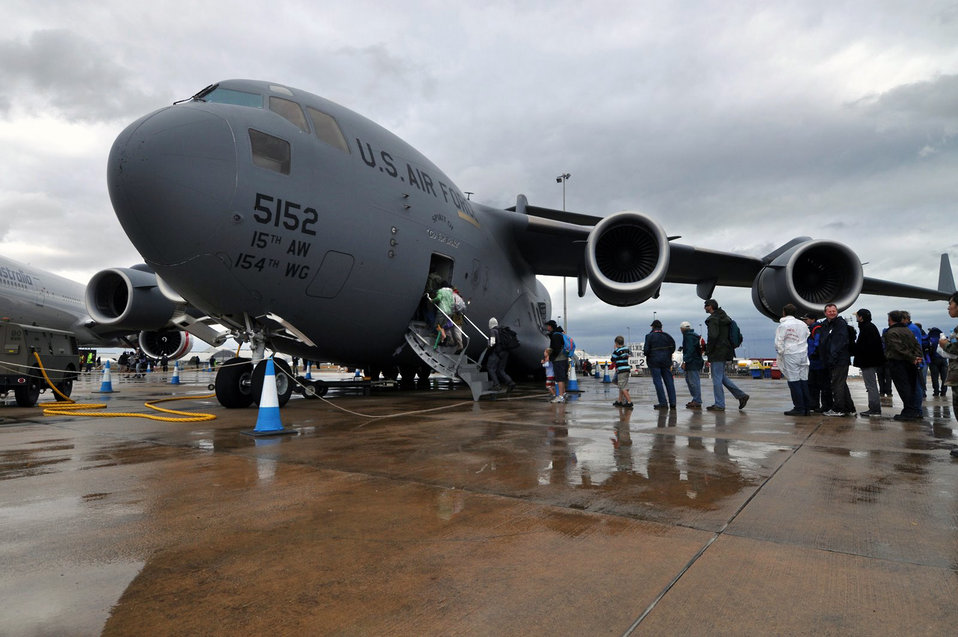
Airmen represent U.S. military at airshow 'down under'

Airshow crowds take a firsthand look at a C-17 Globemaster III at the 2009 Australian International Airshow March 15 at Avalon Airport, Australia. The C-17, from the 535th Airlift Squadron from Hickam Air Force Base, Hawaii, was one of 11 U.S. military aircraft participating in the airshow.